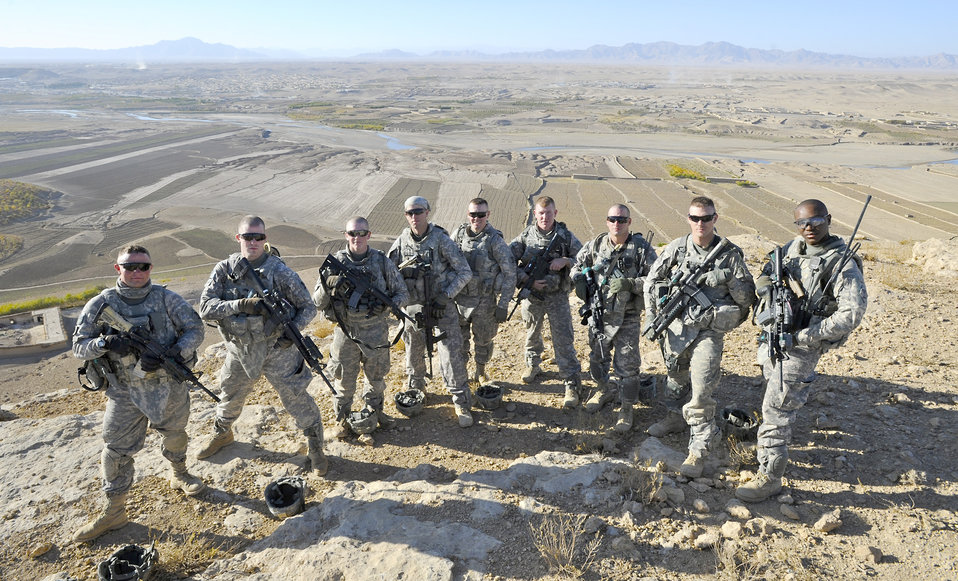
Provincial Reconstruction Team Zabul

Newly assigned U.S. Army Soldiers stand atop a mesa Nov. 1, 2010, near the city of Qalat, Afghanistan, in the Zabul Province, after climbing it to gain situational awareness. The Provincial Reconstruction Team Zabul is composed of Air Force, Army, Department of State, U.S. Agency for International Development and Department of Agriculture personnel who work with the government of Afghanistan to improve governance, stability, and development throughout the province.